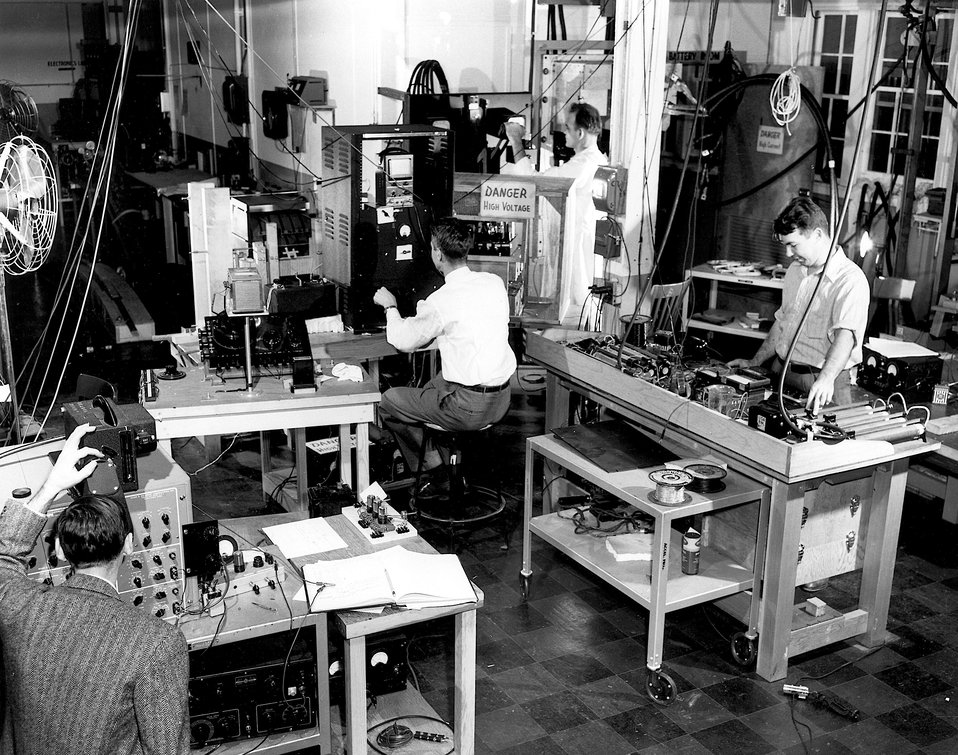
Magnet test laboratory in Building T-194.
Personnel reading from left to right are
G.K. Green, R. Meyer, F. Janik and L. Redmond.